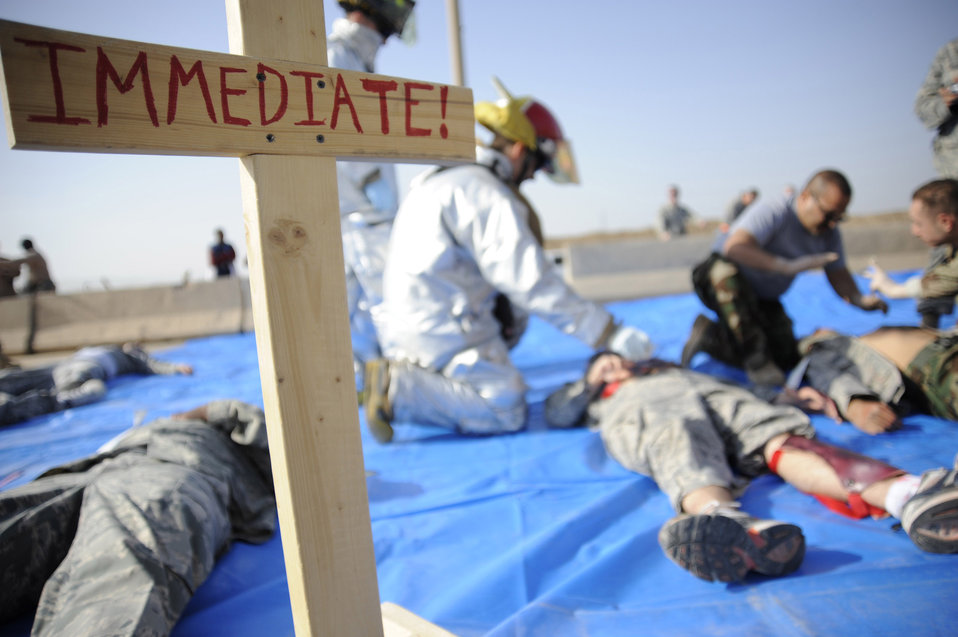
Internal training key to Iraqi air force independence

Iraqi and U.S. emergency response personnel attend to mock immediate care casualties during a major accident response exercise Nov. 21 at New Al-Muthana Air Base, Iraq. The exercise tests the abilities of a joint response of fire rescue, medical and security capabilities.